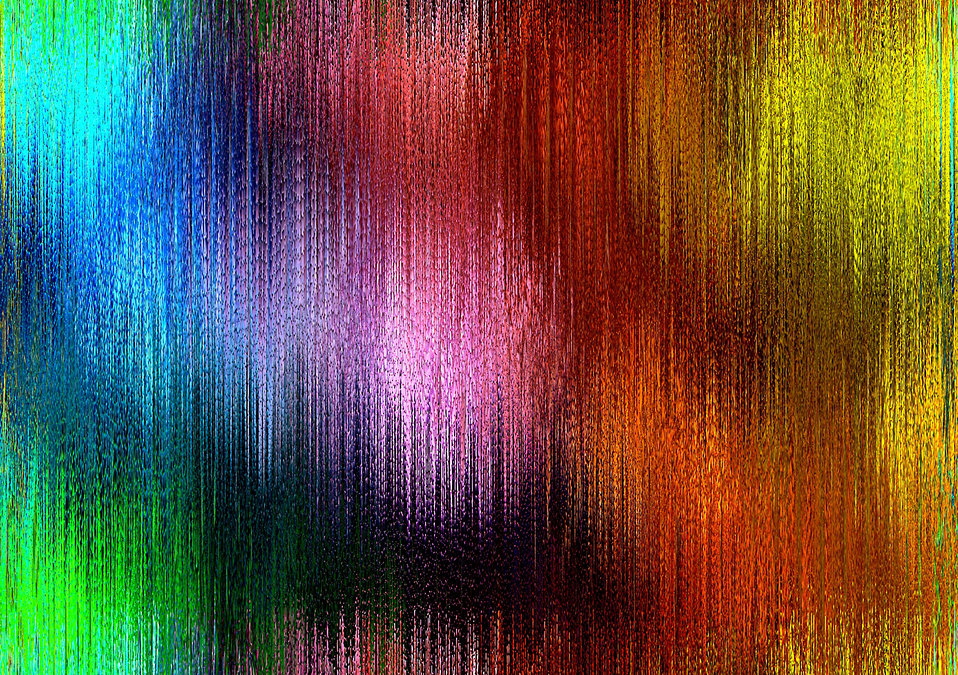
Background 433

Background.